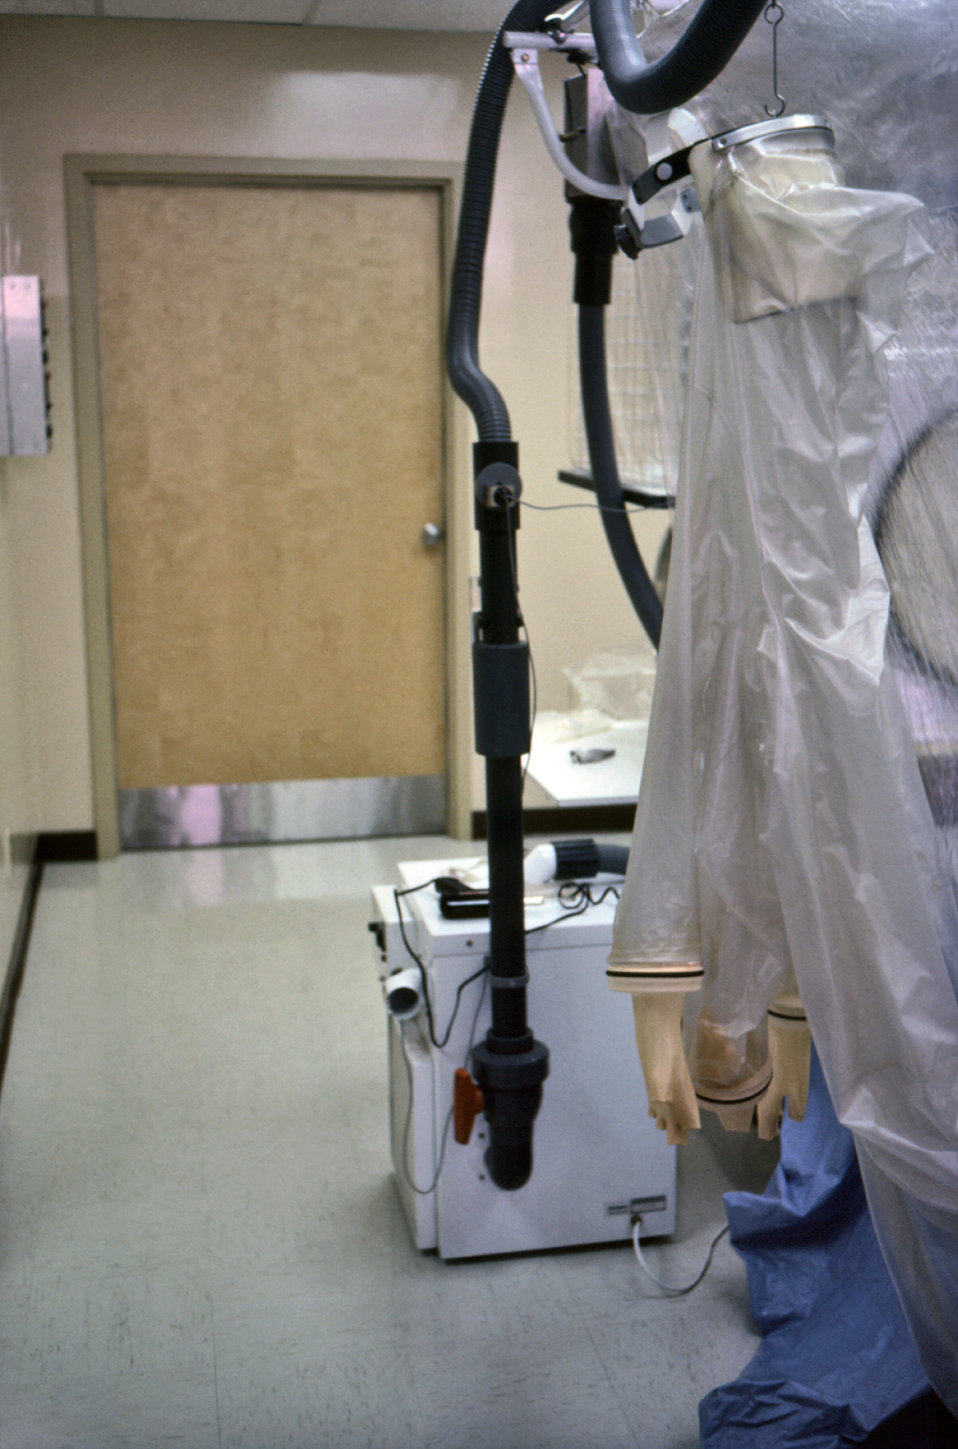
This 1980 photograph depicted the inside of a Vicker's isolation suite that was located at what was formerly known as the Georgia Baptist Hospital, which is now known as the Atlanta Medical Center.